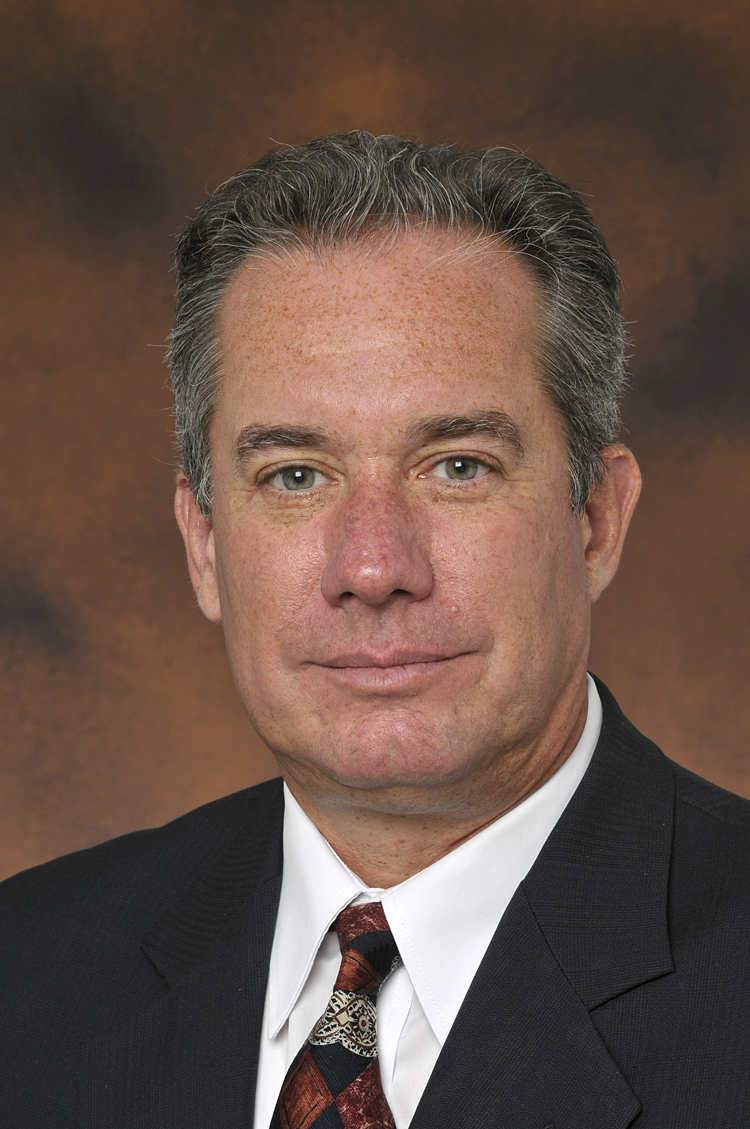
Bill Valdez, Principal Deputy Director, Office of Economic Impact and Diversity